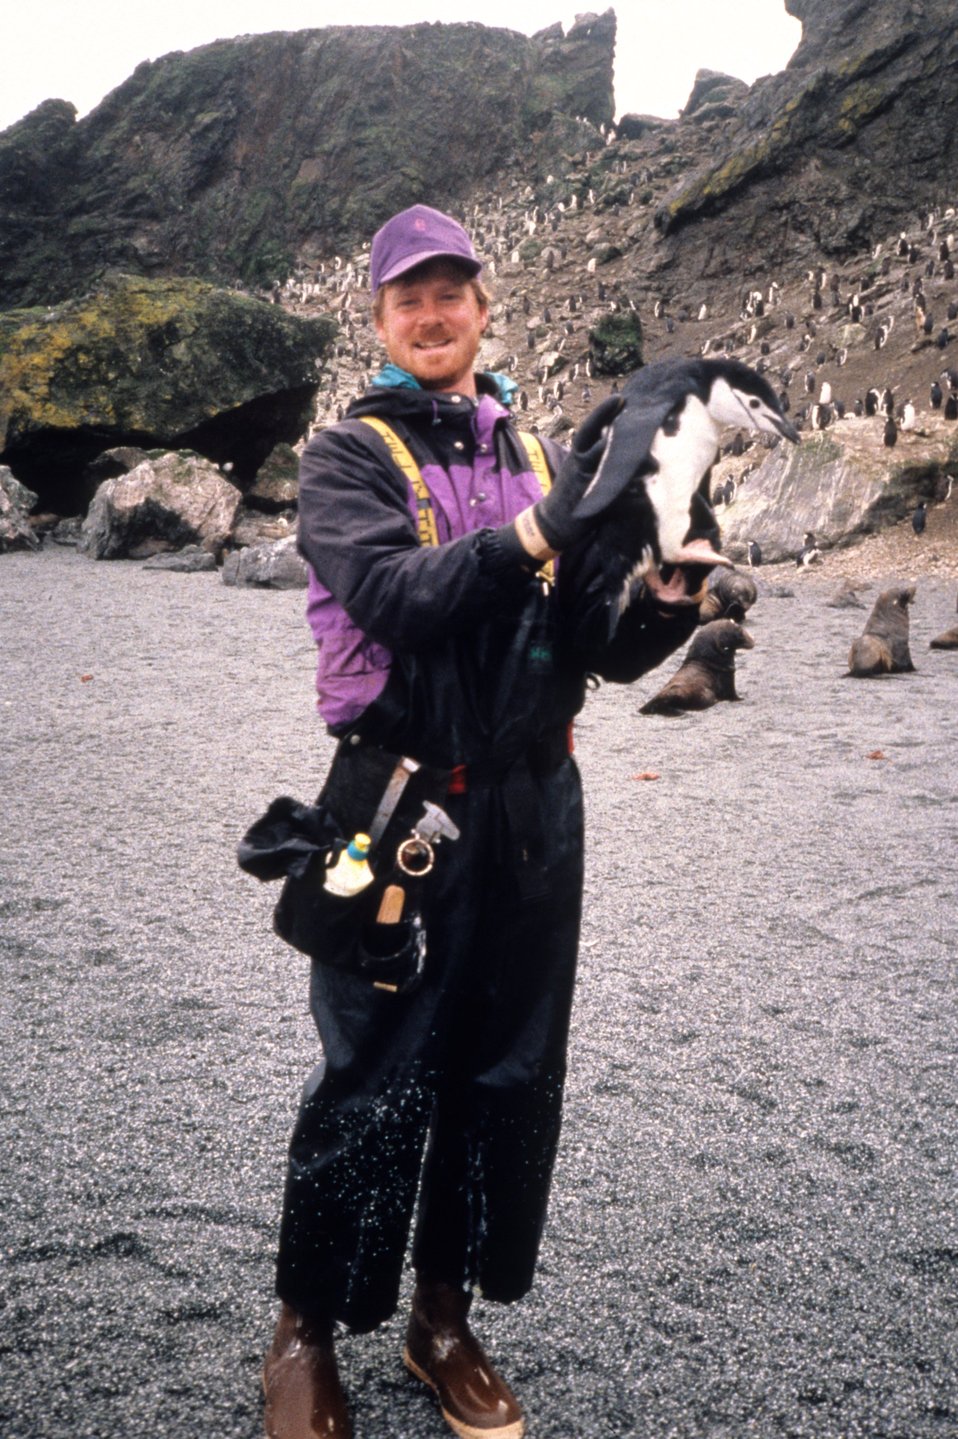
Biologist John Jansen weighs and measures a chinstrap penguin (soon to be released and set on its way).